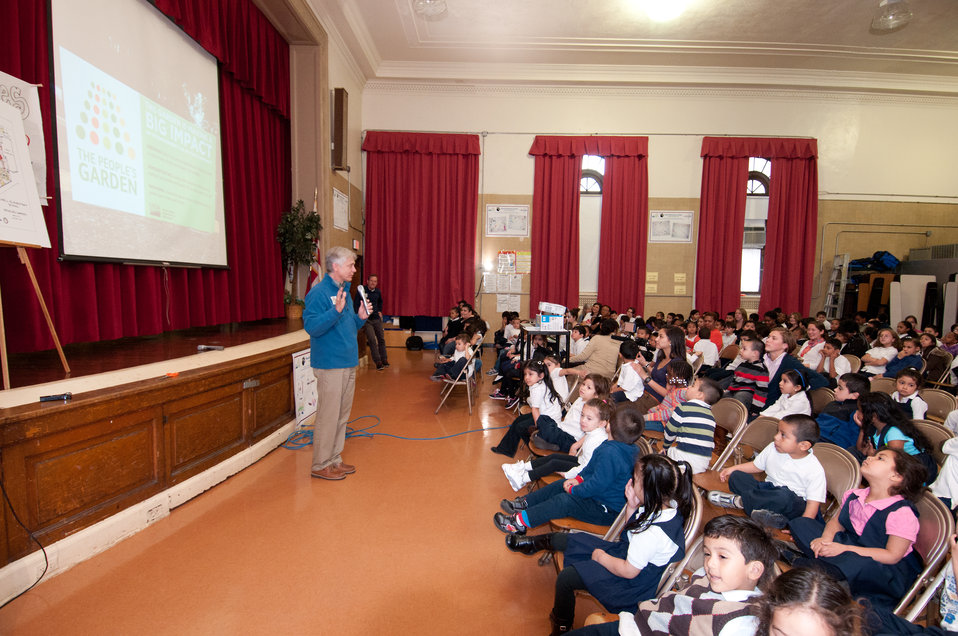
The People’s Garden team architect Bob Sneickus (standing) presents photos of the work it took to develop the School Garden Design Concept for the parents and students of W. B. Powell Elementary School, Washington D.C., onThursday, March 10, 2011. This People’s Garden team consists of the Washington Capitols, U.S. Department of Agriculture and D.C. Public Schools in Washington, D.C. Their presentation will support the 289 parents and students. The design draft was created by Forest Service landscape architect Matt Arnn, with the support of Natural Resources Conservation Service landscape architect Bob Sneickus, Outreach and Education Coordinator Annie Ceccarini and Project Manager Leslie Burks who worked with the Principal Janeece Docal and the school during an earlier visit to develop illustrated ideas from parents and students. Representing the Washington Capitols is Defenseman, Number: 52 Mike Green, Comcast SportsNet Analyst Alan May and Director of Community Relations Elizabeth Wodatch.